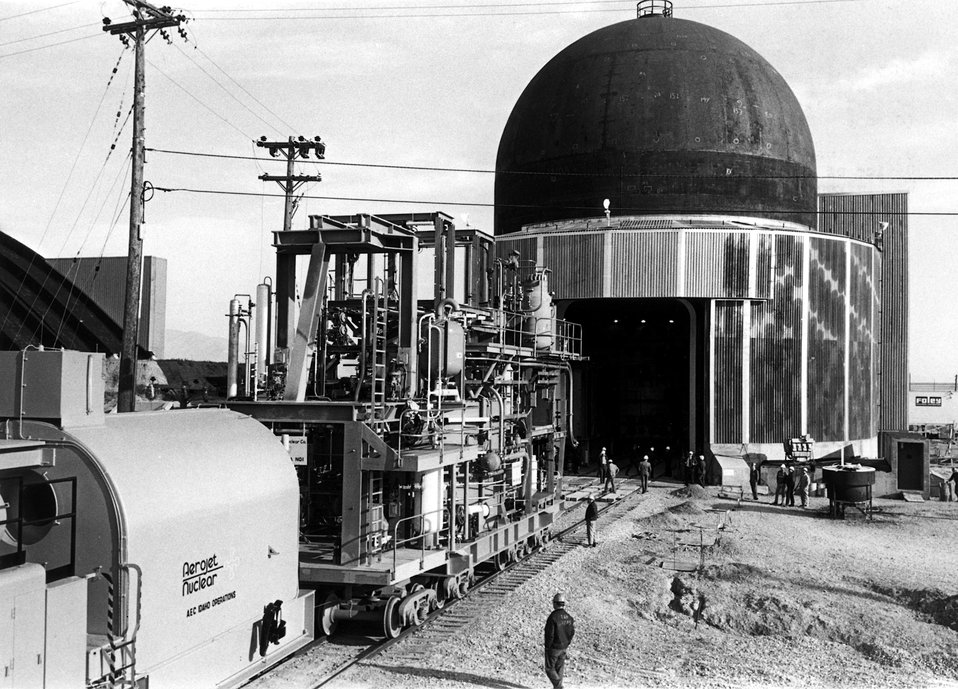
The LOFT (Loss of Fluid Test) Mobile Test Assembly (MTA) enroute to the LOFT containment building on November 2, 1973 at the U.S. Atomic Energy Commission's National Reactor Testing Station in Idaho. Circa 1974.